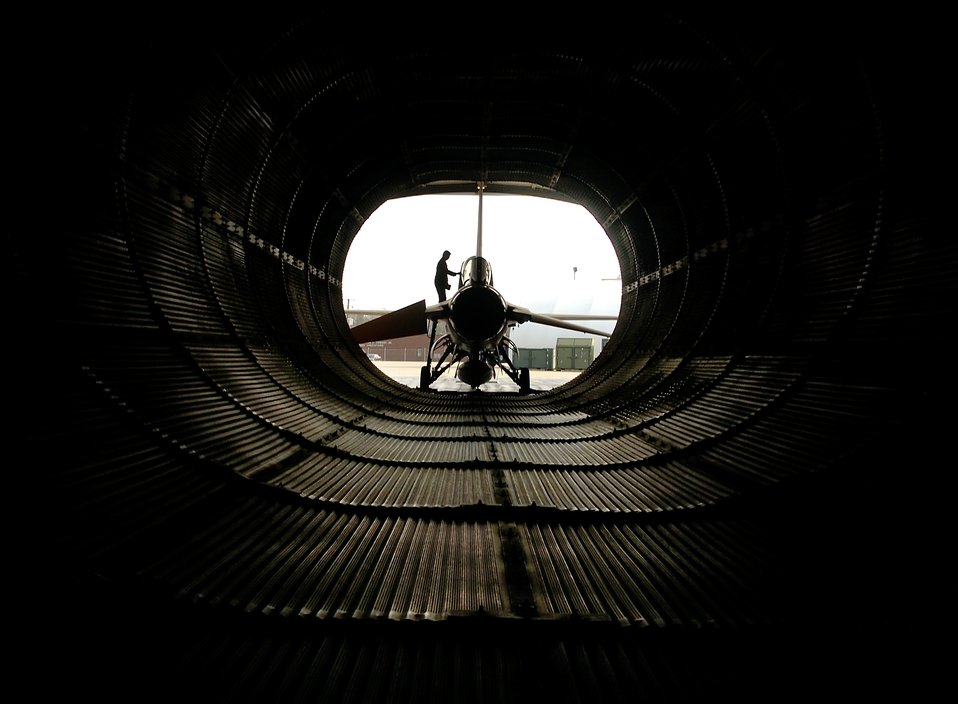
Guard fighter aircraft transition

Tech. Sgt. Paul Holloway prepares an F-16 Fighting Falcon for engine run at the Virginia Air National Guard located at Sandstone, Va., on Friday, March 31, 2006. The Virginia ANG is currently transitioning to the new F-22A Raptor at Langley Air Force Base and will replace the F-16s as early as October 2007. Sergeant Holloway is a maintenance technician with the 192 Aircraft Maintenance Squadron.